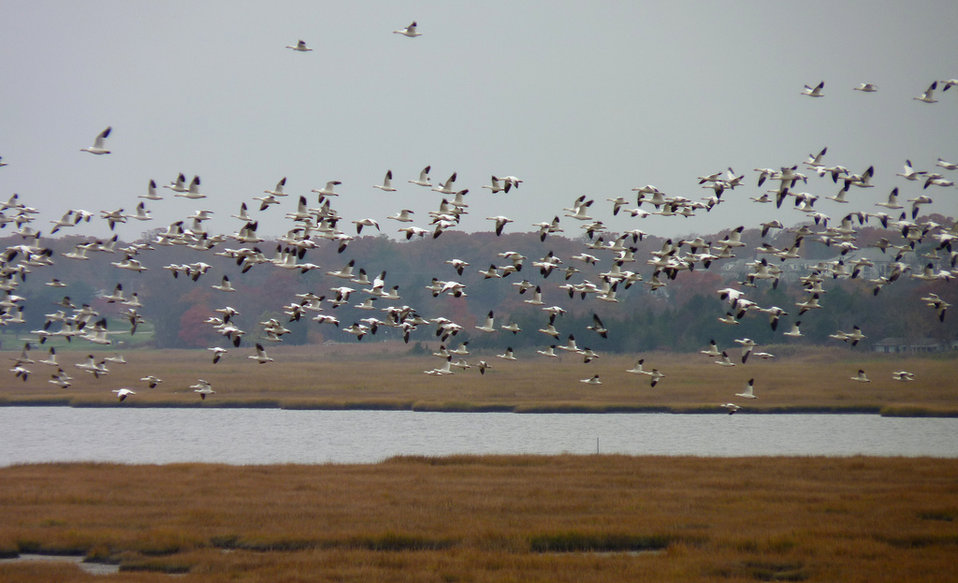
snow geese

Edwin B. Forsythe National Wildlife Refuge, NJ
Photo: dendroica cerulea, Creative Commons